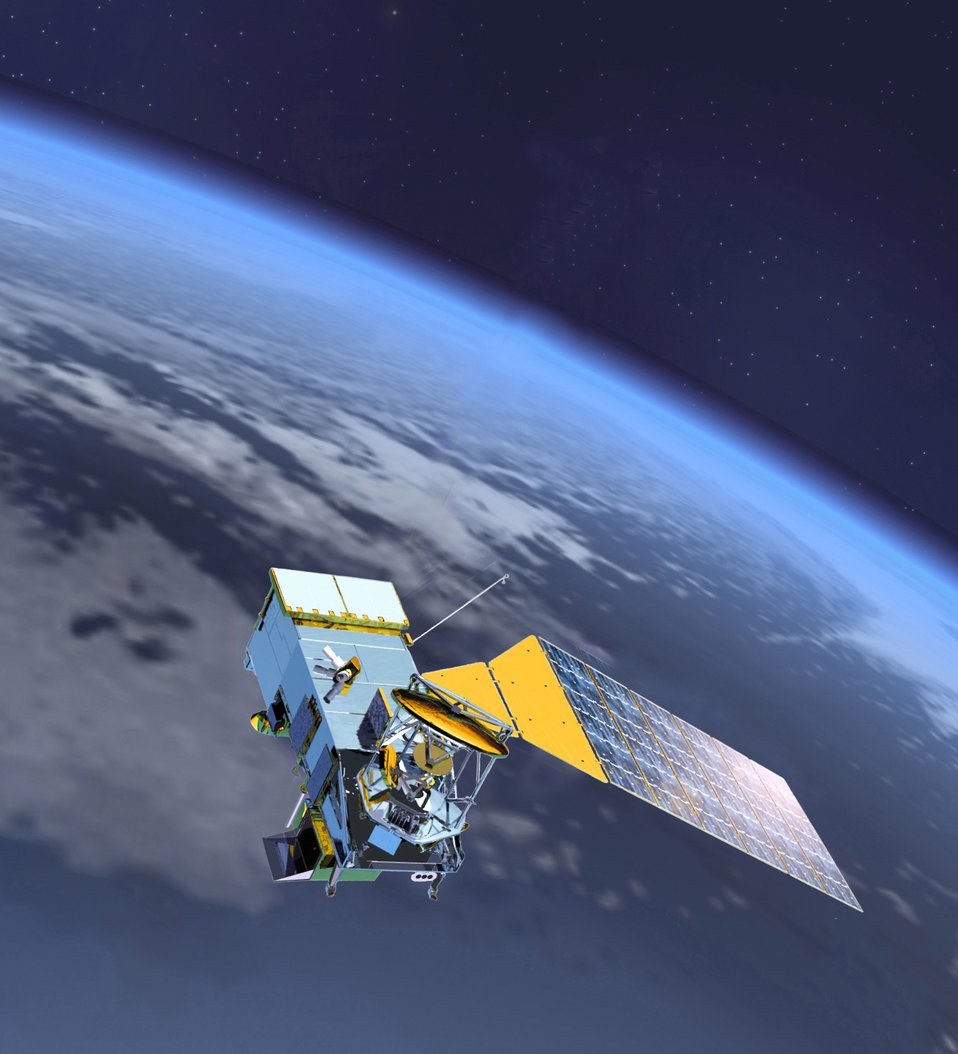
6th SOPS delivers critical weather data to warfighters

The Defense Satellite Meteorological Program is supported by the 6th Space Operations Squadron at Schriever Air Force Base, Colo. The 6th SOPS transforms weather from a force of nature into a force warfighters can use to their advantage.